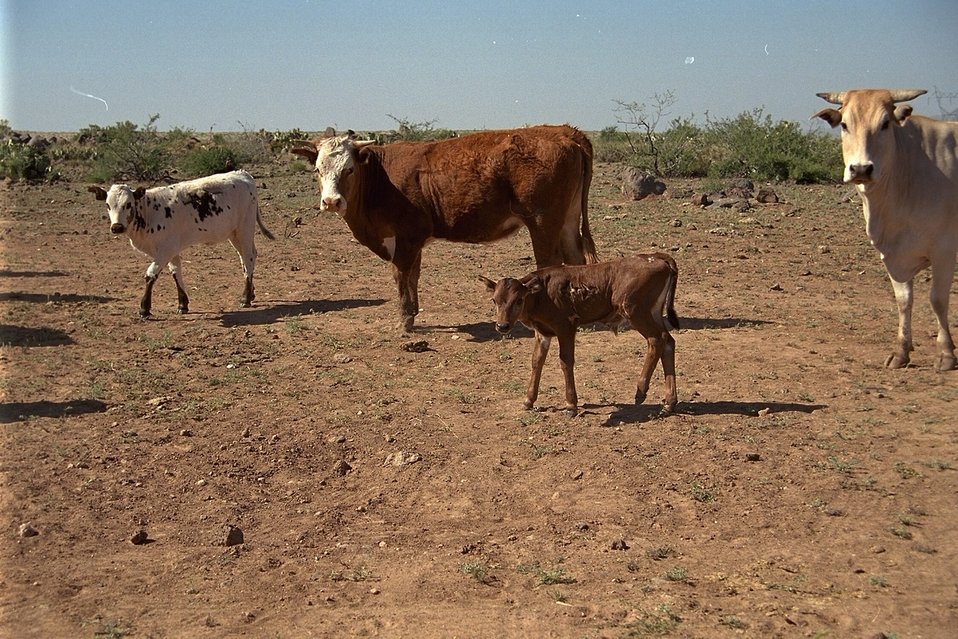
Cattle Grazing in the Agua Fria National Monument by the Richinbar Mine site.